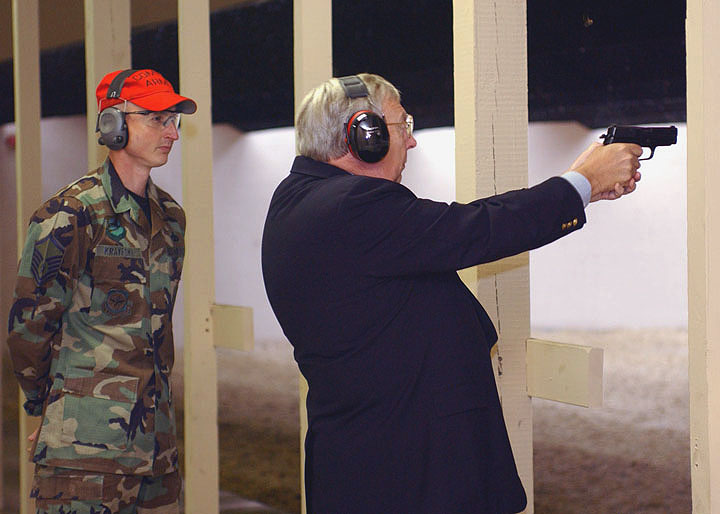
Taking aim

ANDREWS AIR FORCE BASE, Md. -- Master Sgt. John Krayeski observes as Secretary of the Air Force Dr. James G. Roche shoots a 9 mm pistol at the firing range here Oct. 27. Krayeski is a combat arms instructor assigned to the 89th Security Forces Squadron.